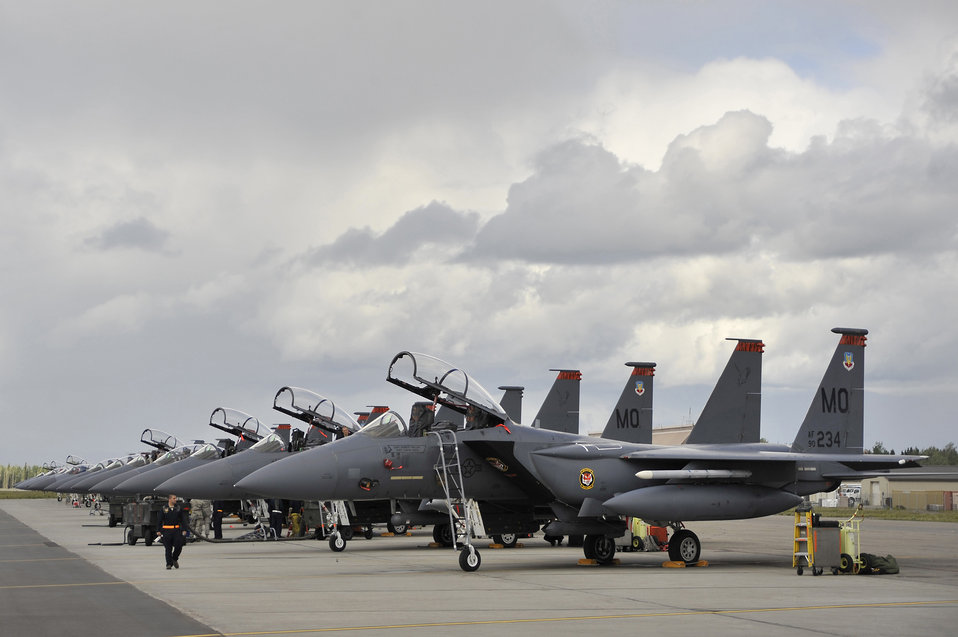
NORTHERN EDGE 2011 exercise

F-15E Strike Eagles sit on the flightline June 13, 2011, at Eielson Air Force Base, Alaska.